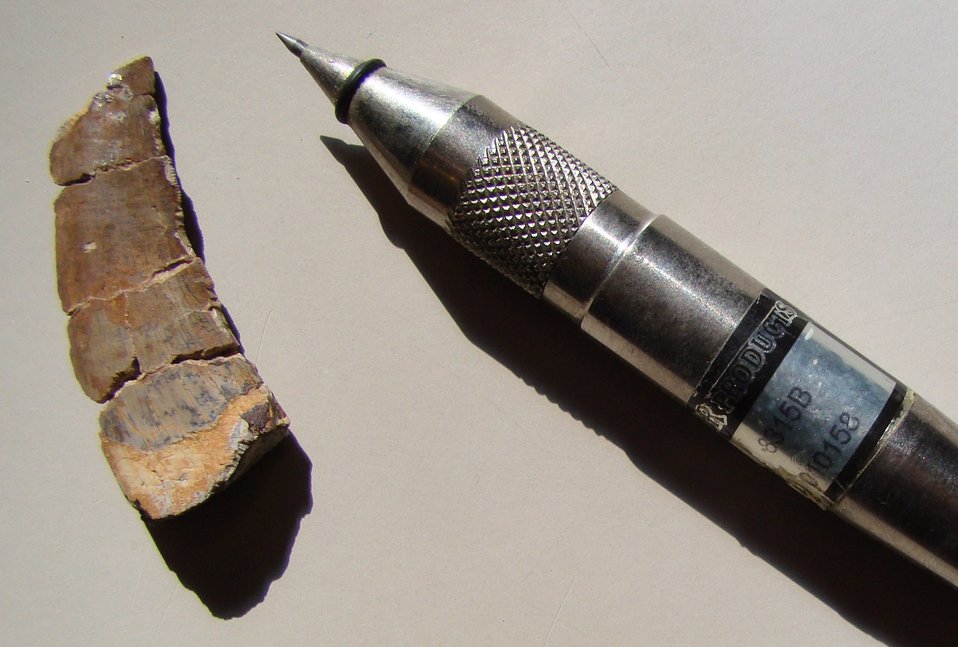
dinosaur Ceratosaurus tooth Oct2012

A tooth from a meat-eating Ceratosaurus recovered from the River View Quarry in October 2012.